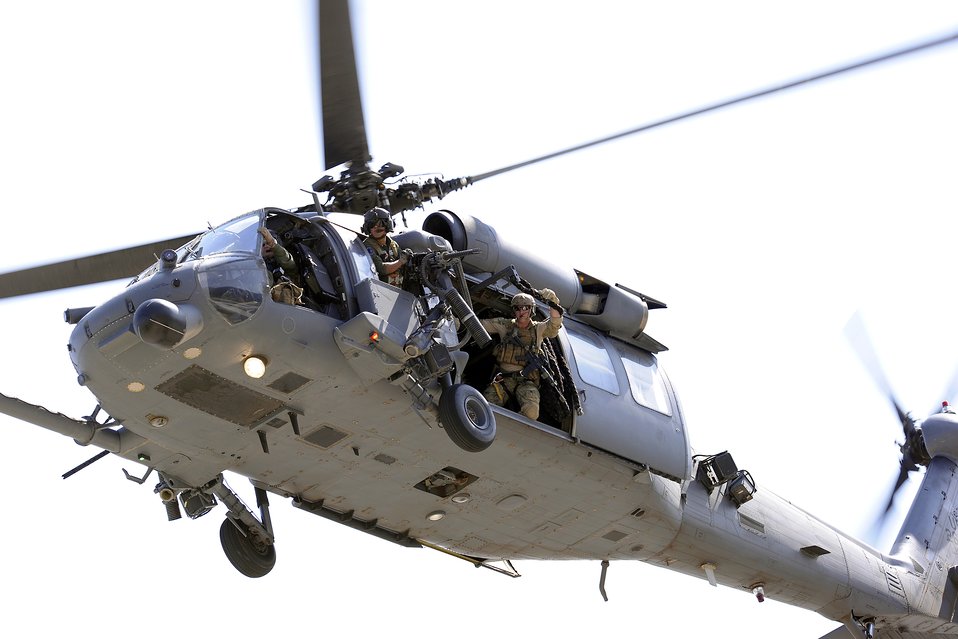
Search and rescue demonstration

An HH-60 Pave Hawk helicopter crew participates in a combat search and rescue demonstration Oct. 1, 2010, at the U.S. Air Force Academy in Colorado Springs, Colo. The HH-60 and its crew are assigned to Davis Monthan Air Force Base, Ariz.